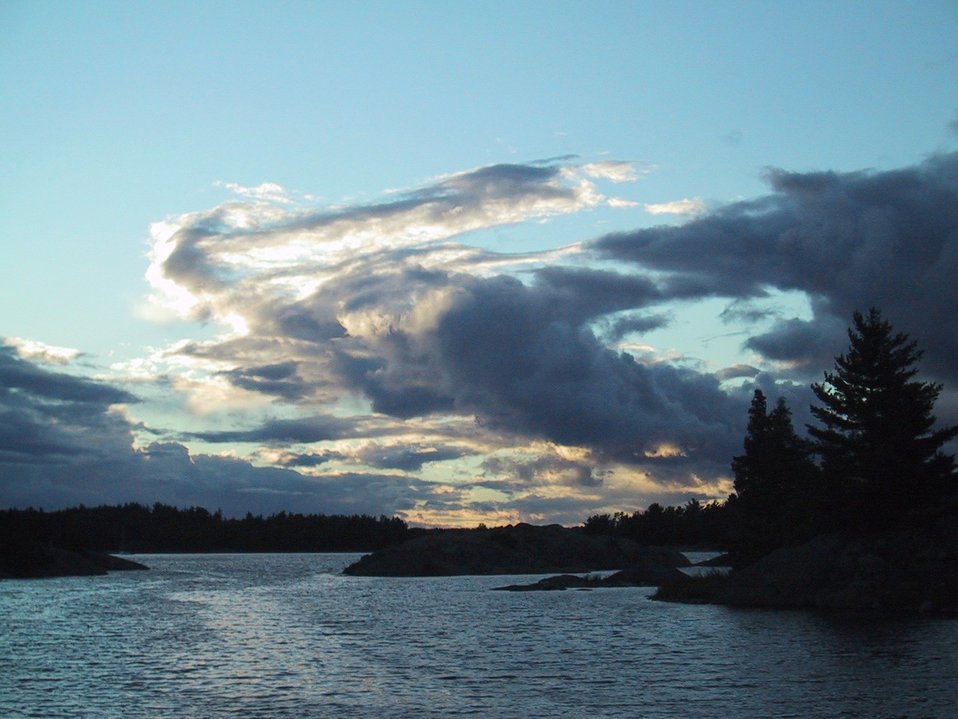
Sunrise over Lake Huron